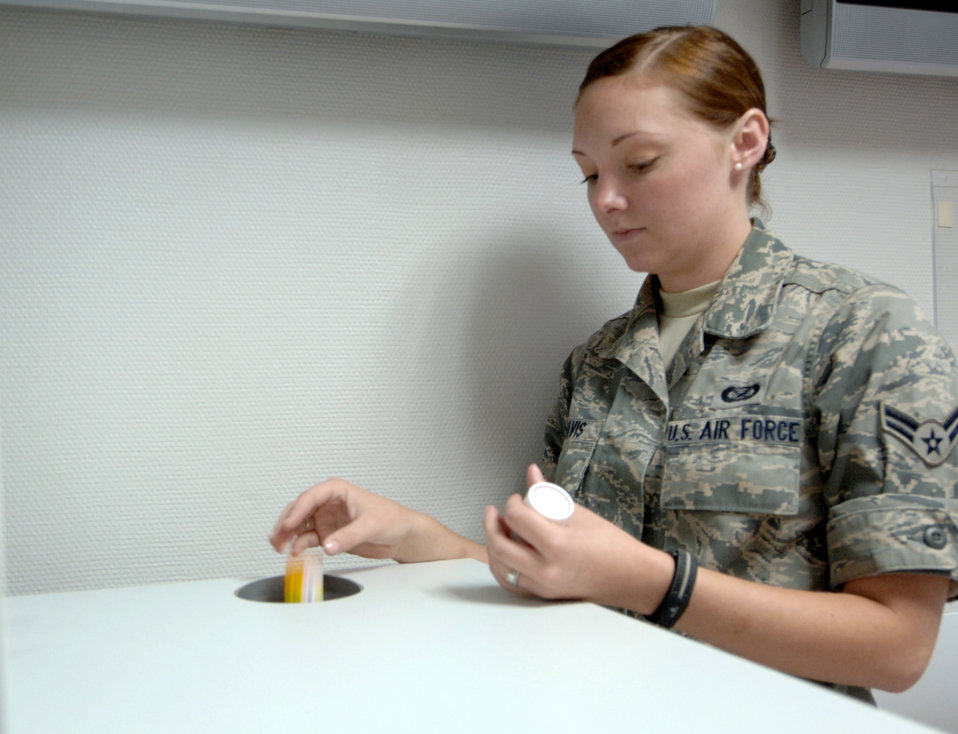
Misuse of prescription drugs could cost career, jail time

Airman 1st Class Ciara Travis disposes of old prescription medication at the Ramstein AB Clinic pharmacy lobby July 27, 2010, at Ramstein Air Base, Germany. At Ramstein AB, there has been a spike in the number of people who misuse prescription medication and test positive for a drug test, which can cause serious repercussions for a servicemember's career. Airman Travis is an 86th Airlift Wing Public Affairs apprentice.